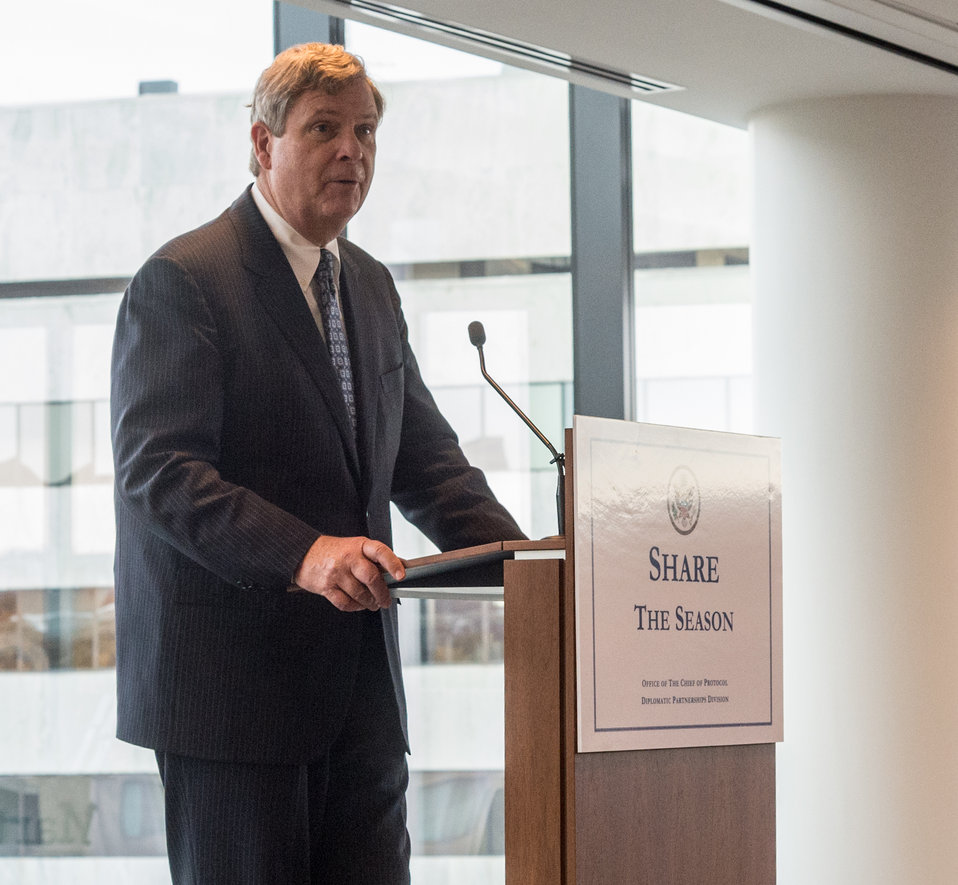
Agriculture Secretary Tom Vilsack speaks to embassy representatives at the Share the Season event organized by the U.S. Department of State Office of the Chief of Protocol Diplomatic Partnership Division at the Business Roundtable (BRT) in Washington, D.C. on Thursday, Nov. 21, 2013. BRT is a non-profit association of chief executive officers of leading U.S. companies that encourages embassies and diplomats to be active in local community service projects.